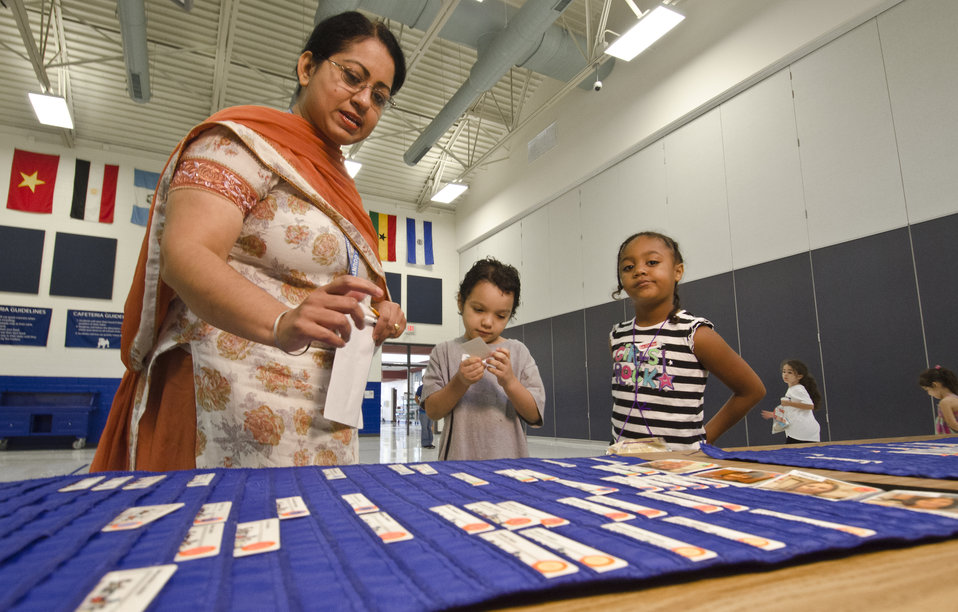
School lunch staff and students enjoy the new school lunch menu created to meet the new standards at the Yorkshire Elementary School in Manassas, VA on Friday, Sept. 7, 2012.